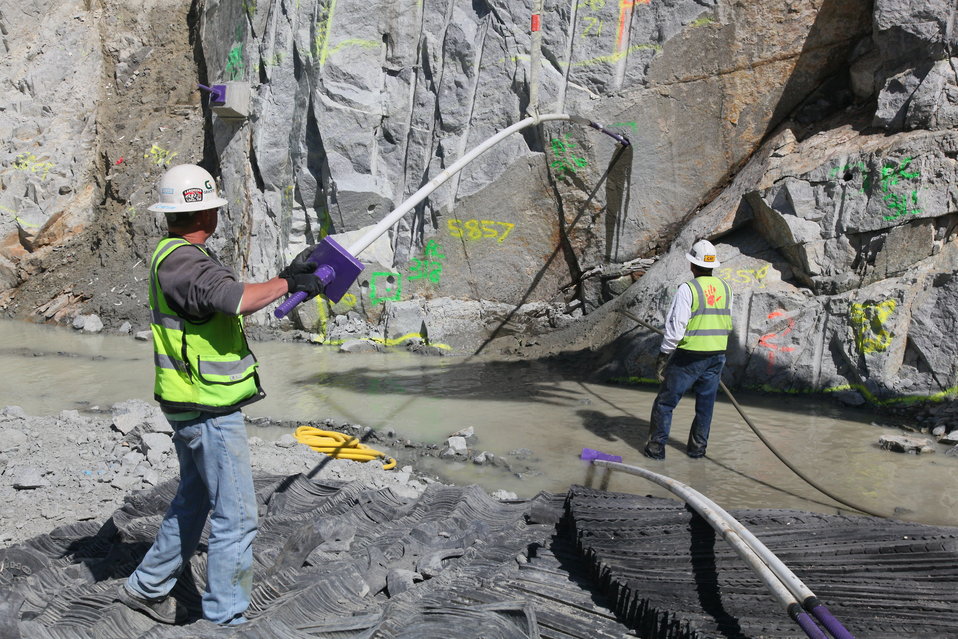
Installing rock securing bolts at the Folsom Dam auxiliary spillway

Contractors for the U.S. Army Corps of Engineers Sacramento District install a slurry mix and bolts to secure rock walls at the excavation site for the Folsom Dam auxiliary spillway in Folsom, Calif., April 5, 2012. Geologists determine placement of drilled holes to secure the upstream rock wall of the spillway. The spillway, scheduled to be ready for use in 2017, will allow Folsom Dam to release water sooner and more safely. The project is part of the Folsom Dam Joint Federal Project, a joint effort of the Sacramento District, the U.S. Bureau of Reclamation, the Central Valley Flood Protection Board and the Sacramento Area Flood Control Agency to improve the safety of the dam and reduce flood risk for the greater Sacramento area.